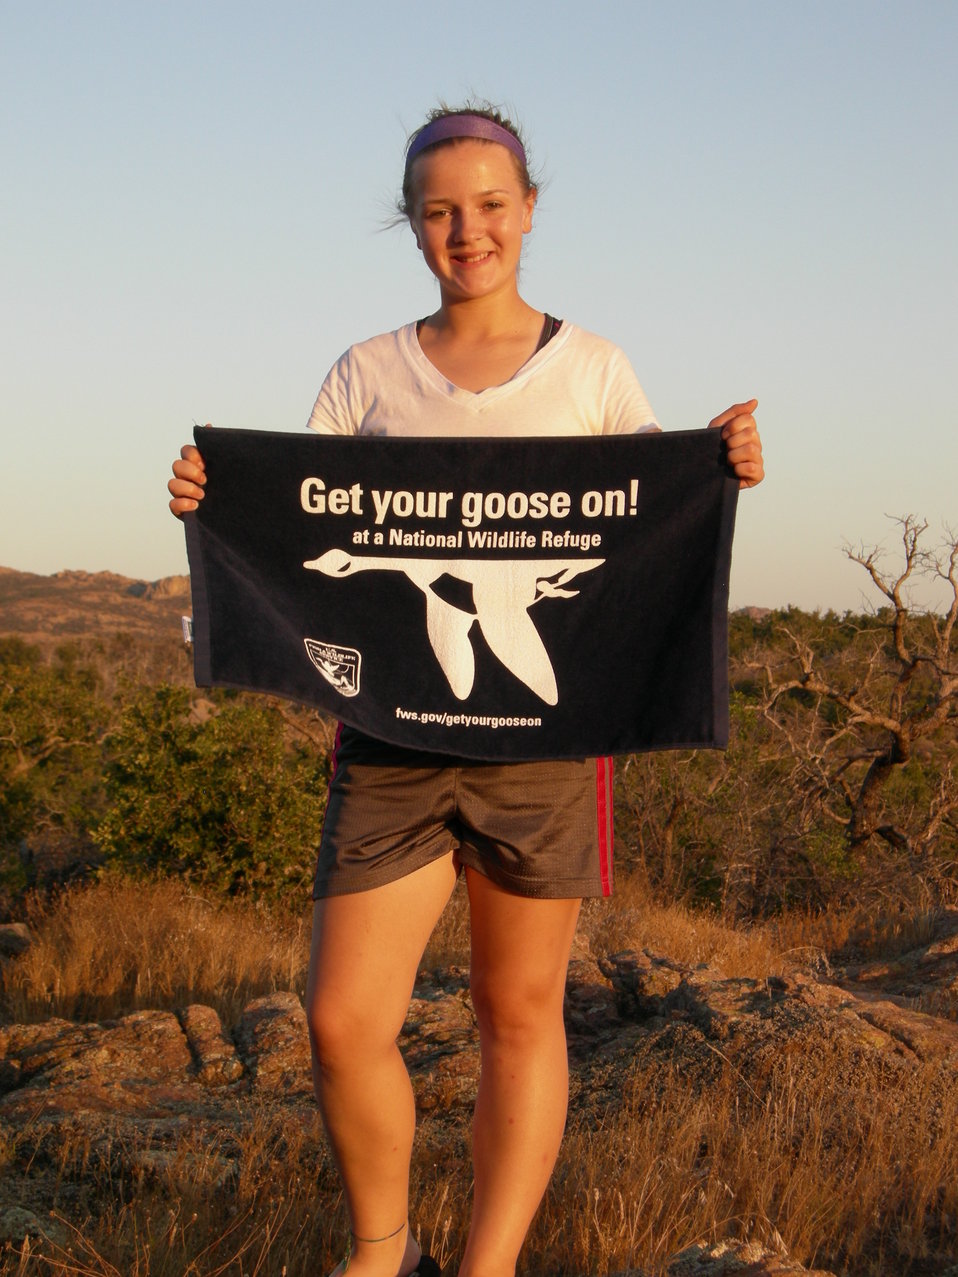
Get Your Goose On!

Wichita Mountains National Wildlife Refuge in Oklahoma.